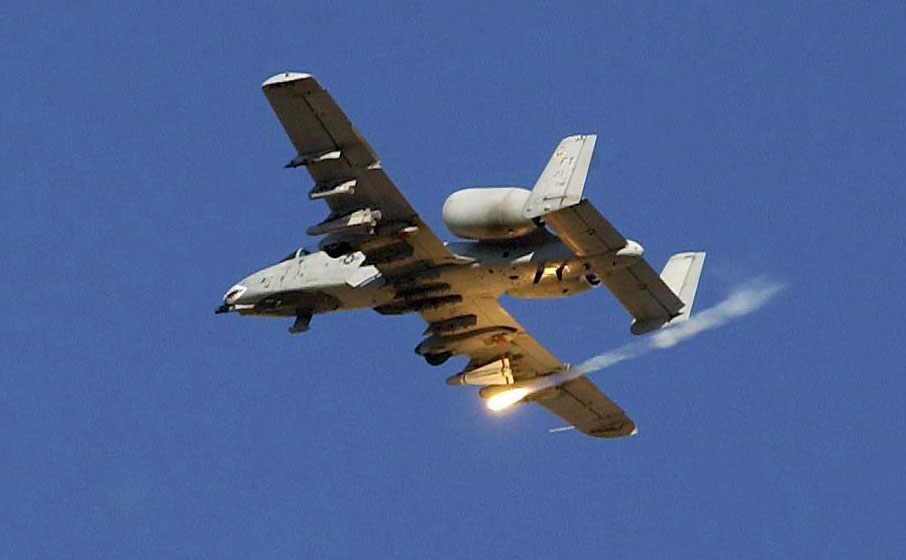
'Cyclone' over Iraq

KIRKUK, Iraq -- A pilot in an A-10 Thunderbolt II drops a flare here Nov. 17 during Operation Ivy Cyclone. The operation is a combined-arms operation designed to root out and crush insurgents in Iraq. The aircraft is from the 74th Fighter Squadron at Pope Air Force Base, N.C.